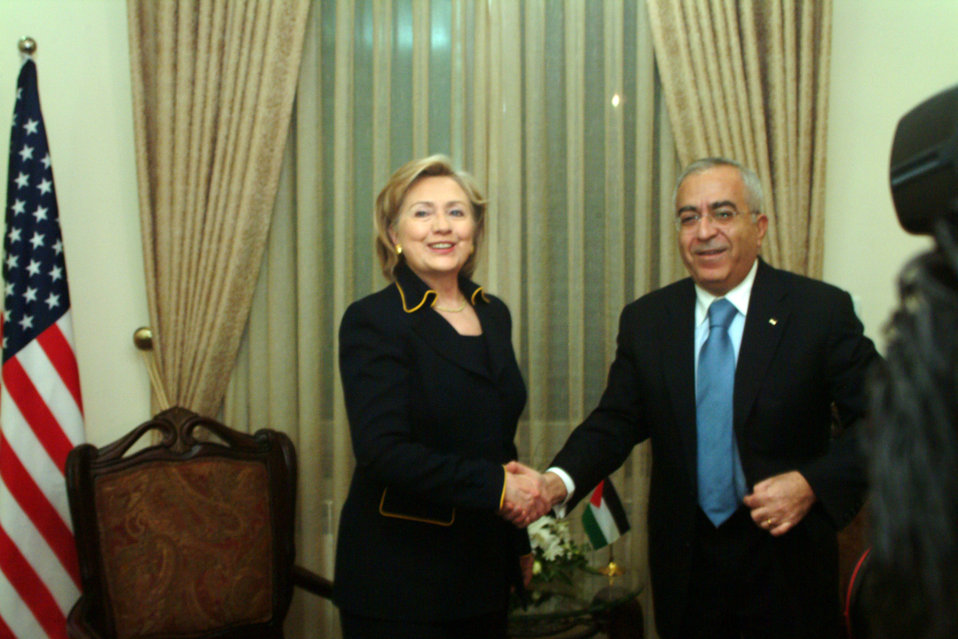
Secretary Clinton With Palestinian Authority Prime Minister

U.S. Secretary of State Hillary Rodham Clinton with Palestinian Authority Prime Minister Salam Fayad in Ramallah March 4, 2009.